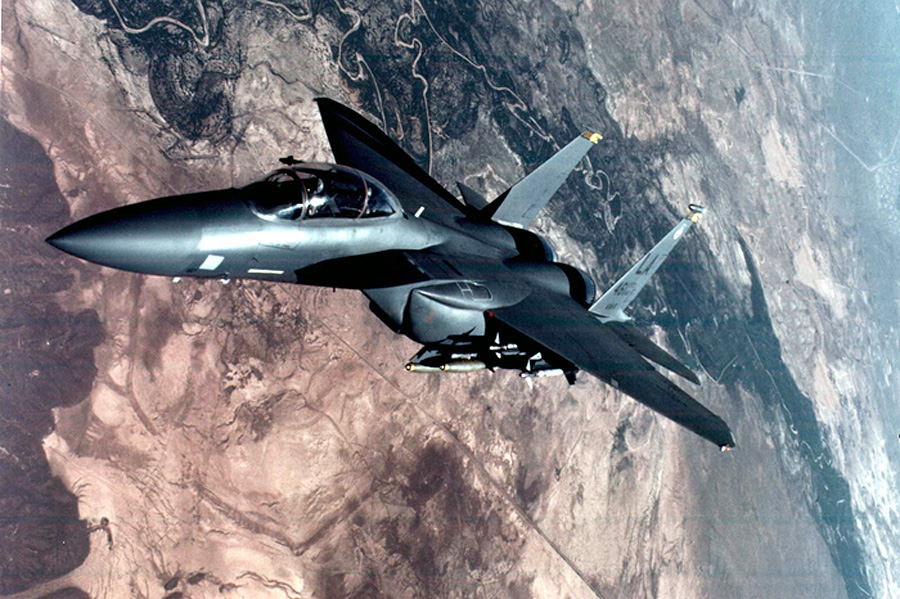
F-15 Eagle

FILE PHOTO -- The F-15 Eagle is an all-weather, extremely maneuverable, tactical fighter designed to gain and maintain air superiority in aerial combat. The Eagle's air superiority is achieved through a mixture of unprecedented maneuverability and acceleration, range, weapons and avionics. It can penetrate enemy defense and outperform and outfight any current or projected enemy aircraft.